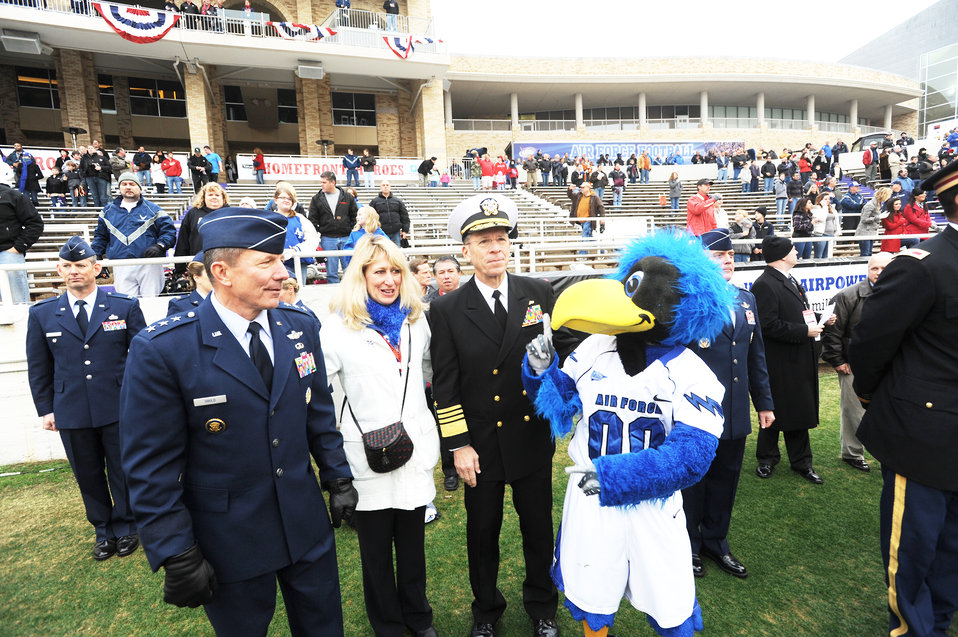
Armed Forces Bowl

Lt. Gen. Mike Gould, superintendent of the Air Force Academy, and his wife Paula, along with Adm. Mike Mullen, chairman of the Joint Chiefs of Staff, enjoy a visit from the Academy's never-bashful mascot, The Bird, Dec. 31, 2009, right before the Armed Forces Bowl kickoff in Fort Worth, Texas. The Air Force Academy Falcons triumphed over the University of Houston Cougars, 41-20.